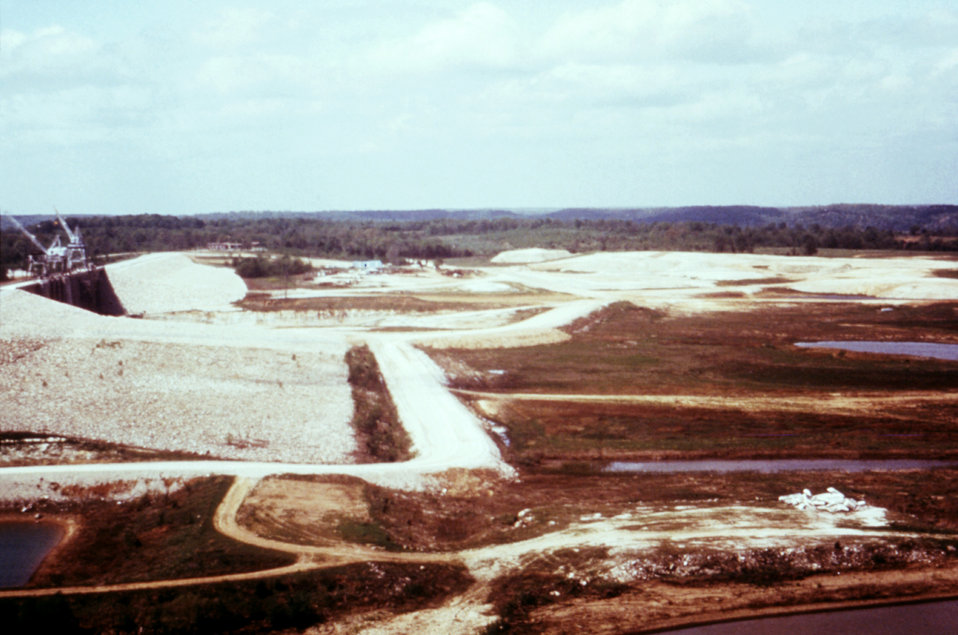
This 1976 photograph shows the dam construction site of the Harry S. Truman Reservoir located in Missouri.